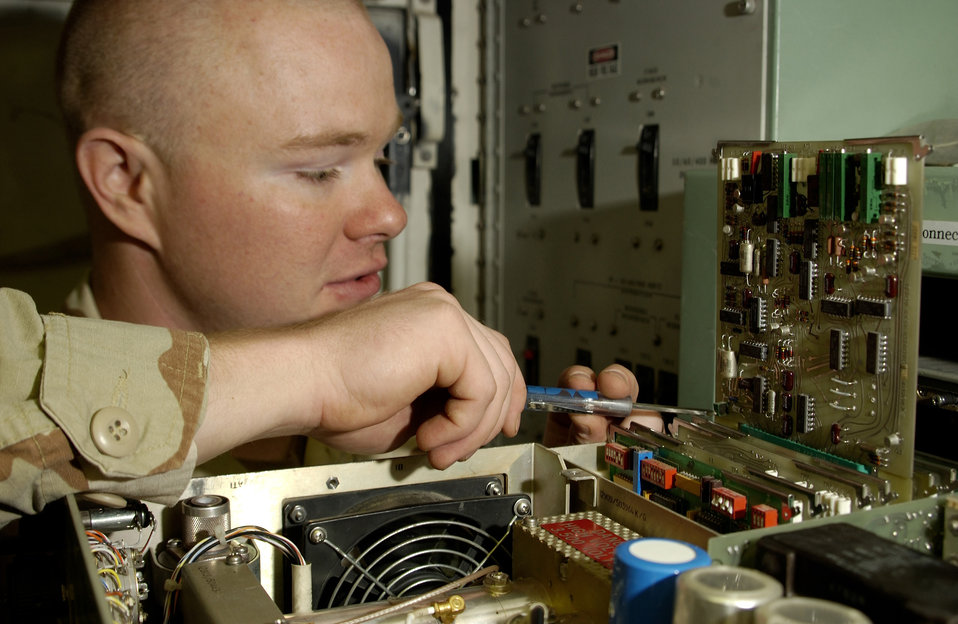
Making it work

KIRKUK AIR BASE, Iraq -- Airman 1st Class David Reed aligns a UPX-23 Interrogator Set which provides target identification. He is assigned to the 727th Expeditionary Air Control Squadron Detachment 1 here. The detachment's Airmen provide commanders and pilots a real-time view of northern Iraq's airspace.